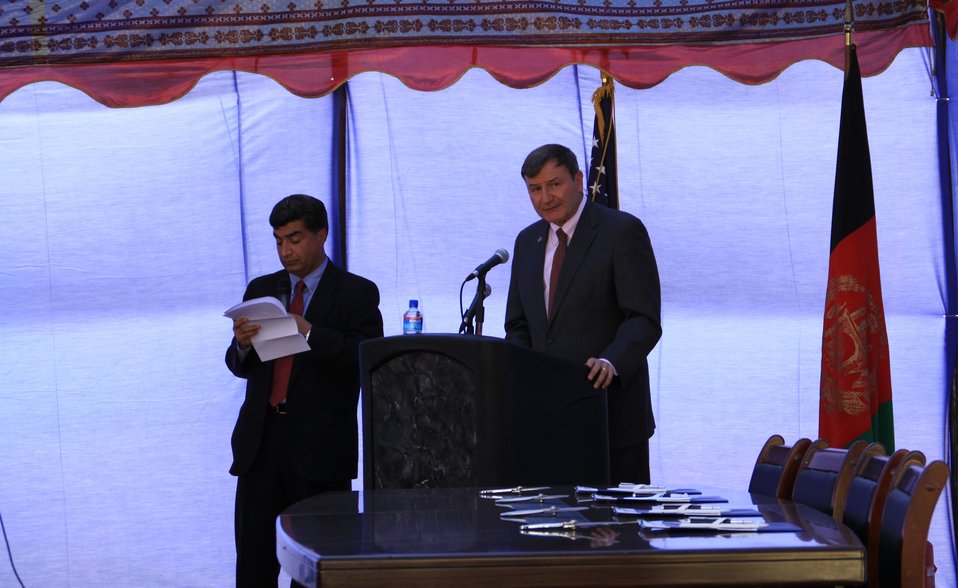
105 MW Tarakhil Power Plant Handover